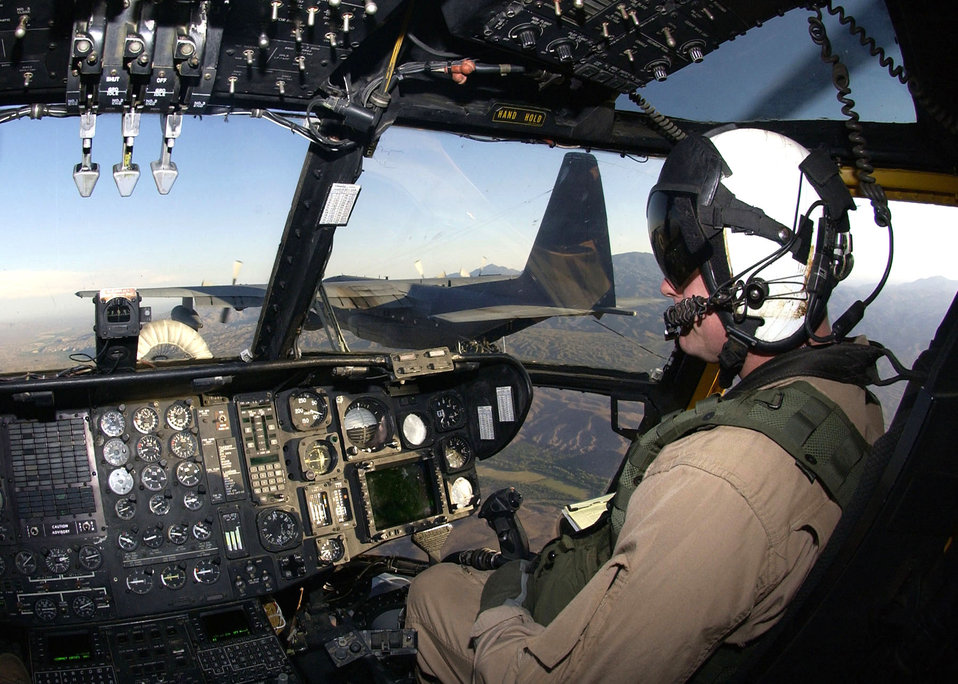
Snowbird operations

Marine Maj. David Montesano guides a CH-53E Super Stallion helicopter while gaining fuel from an HC-130 from the 79th Rescue Squadron at Davis-Monthan Air Force Base, Ariz. The CH-53E and Major Montesano are assigned to the Marine Heavy Helicopter Squadron 769 at Edwards Air Force Base, Calif. The CH-53Es are here training with Airmen as part of Davis-Monthan's joint operations training.